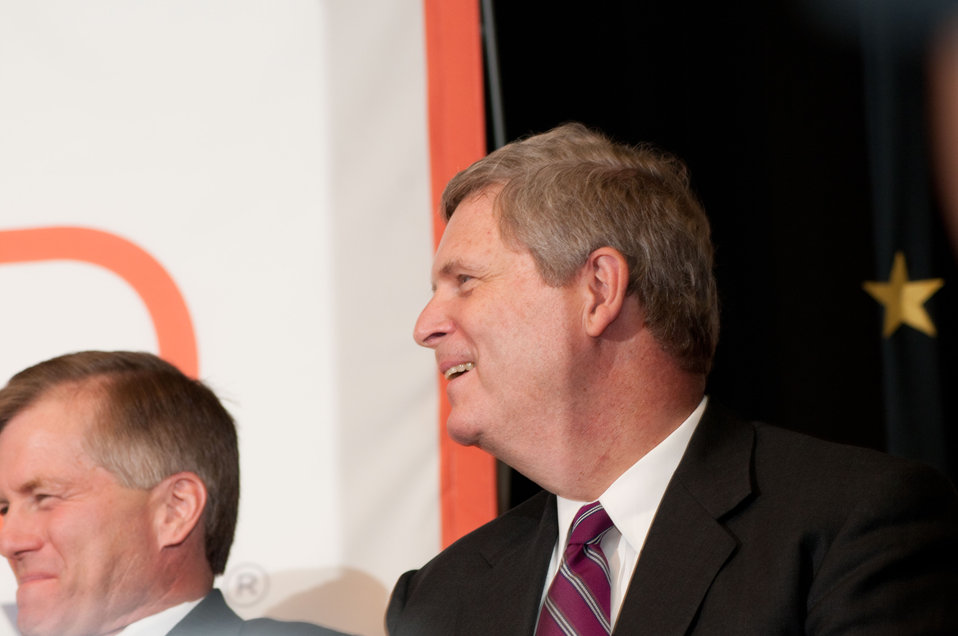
U.S. Department of Agriculture Secretary Tom Vilsack (right) and Virginia Governor Bob McDonnell (left) are amused by the Super Sprowtz, a team of super-powerful vegetable super hero puppet characters during their introduction of Agriculture Secretary Tom Vilsack for the launch of the Virginia No Kid Hungry Campaign at Barcroft Elementary School in Arlington, VA, on Tuesday, June 7, 2011. Vilsack said, “ We know our strength comes from out partnerships…” Campaign partners include Share our Strength, the Federation of Virginia Food Banks, corporate partners, education leaders, government agencies and community organizations. The Virginia Summer Meals for Kids Program is funded by the USDA and provides free summer meals at hundreds of sites across the Commonwealth of Virginia, but according to a new report released today by the Food Research and Action Center, more than 80 percent of those eligible do not participate. Governor McDonnell announced and stressed that all parents who want free meals for their kids in need, can simply call 211 to find a summer meals site near them.